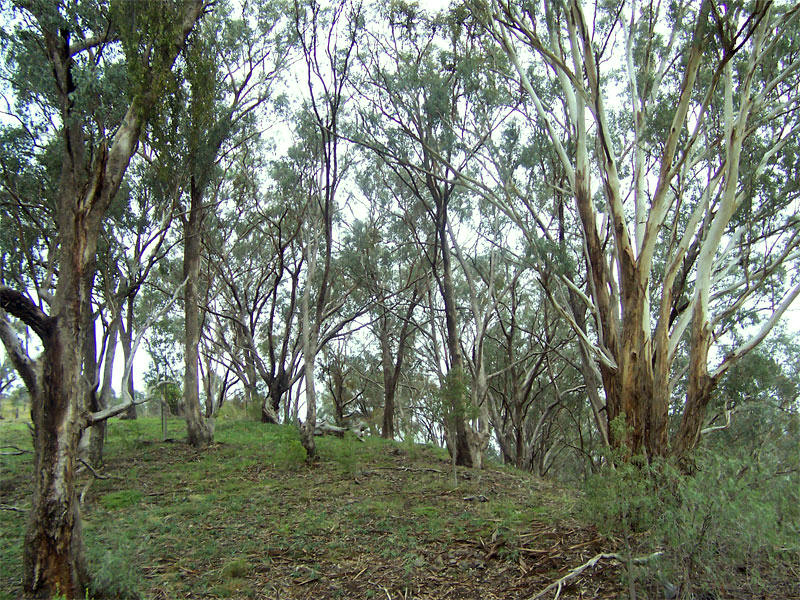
Eucalyptus